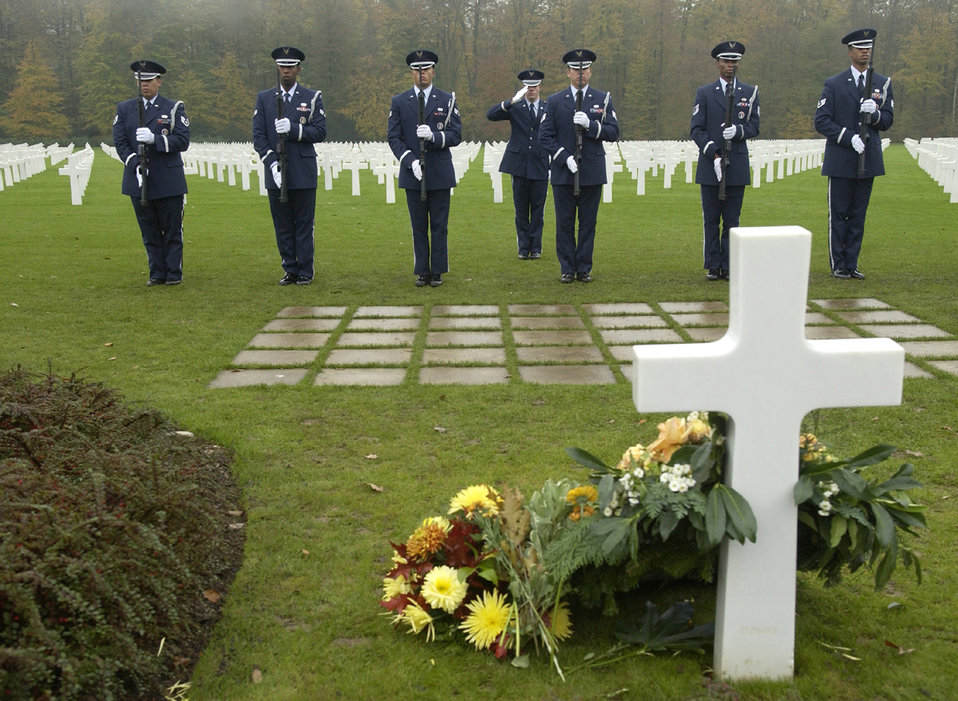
Spangdahlem Airmen honor Veterans

Honor guard members perform before the grave of Gen. George S. Patton during the Veterans Day ceremony at the Luxembourg American Cemetery and Memorial Nov. 11. The honor guard members are from the 52 Fighter Wing at Spangdahlem Air Base, Germany.